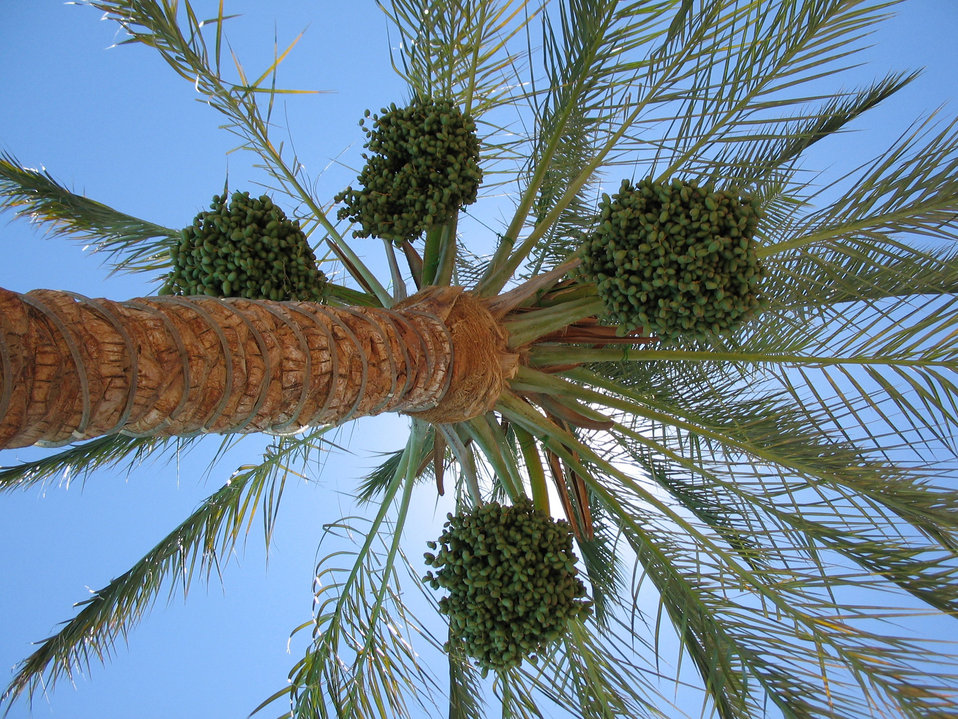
Palm tree with figs

View at the palm tree with figs.